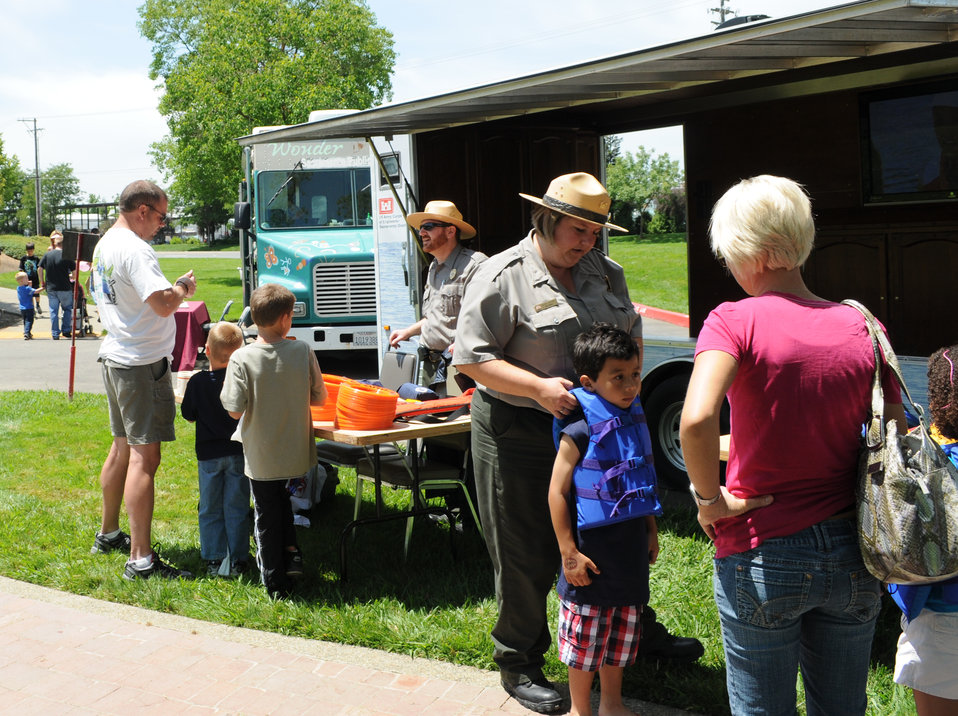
Corps park rangers help teach water safety

U.S. Army Corps of Engineers Sacramento District park rangers Alicia Unsinn (right) and Jon Friedman help young visitors try on life jackets and share water safety tips with visitors at the 13th annual Family Health and Safety Day in Sacramento, Calif., June 11, 2011. An estimated 2,000 people attended the event. “We have to do everything that we can to prevent drowning deaths at the lake,” Unsinn said. “The easiest and most effective way to do this is by wearing a life jacket.”